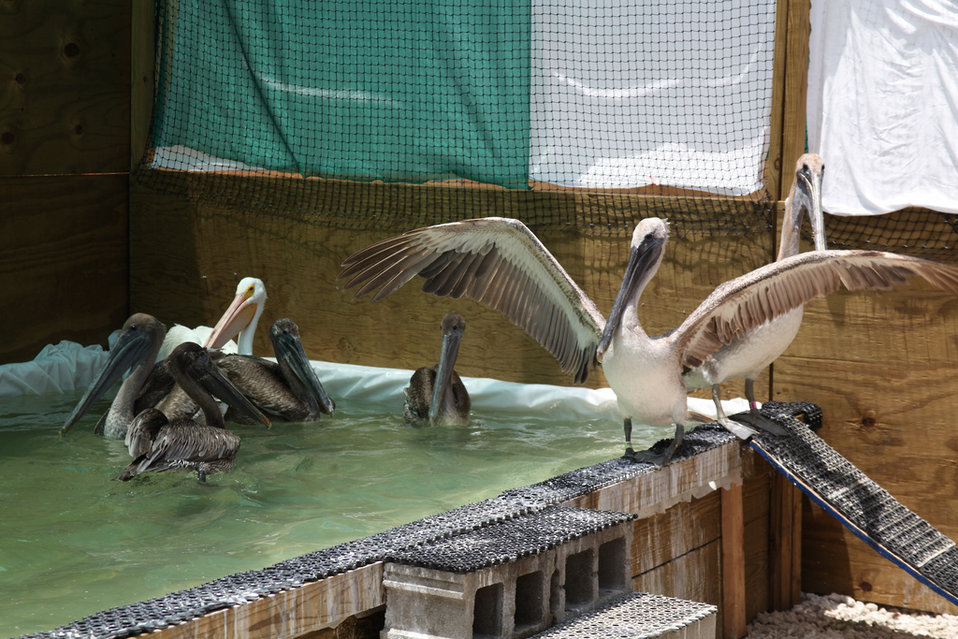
Recovering pelicans, Alabama Credit: Tom MacKenzie, USFWS

4270 Recovering white and brown pelicans at the Theodore Oiled Bird Rehabilitation Center in Alabama. Photo by Tom MacKenzie, USFWS. June 2, 2010 4270